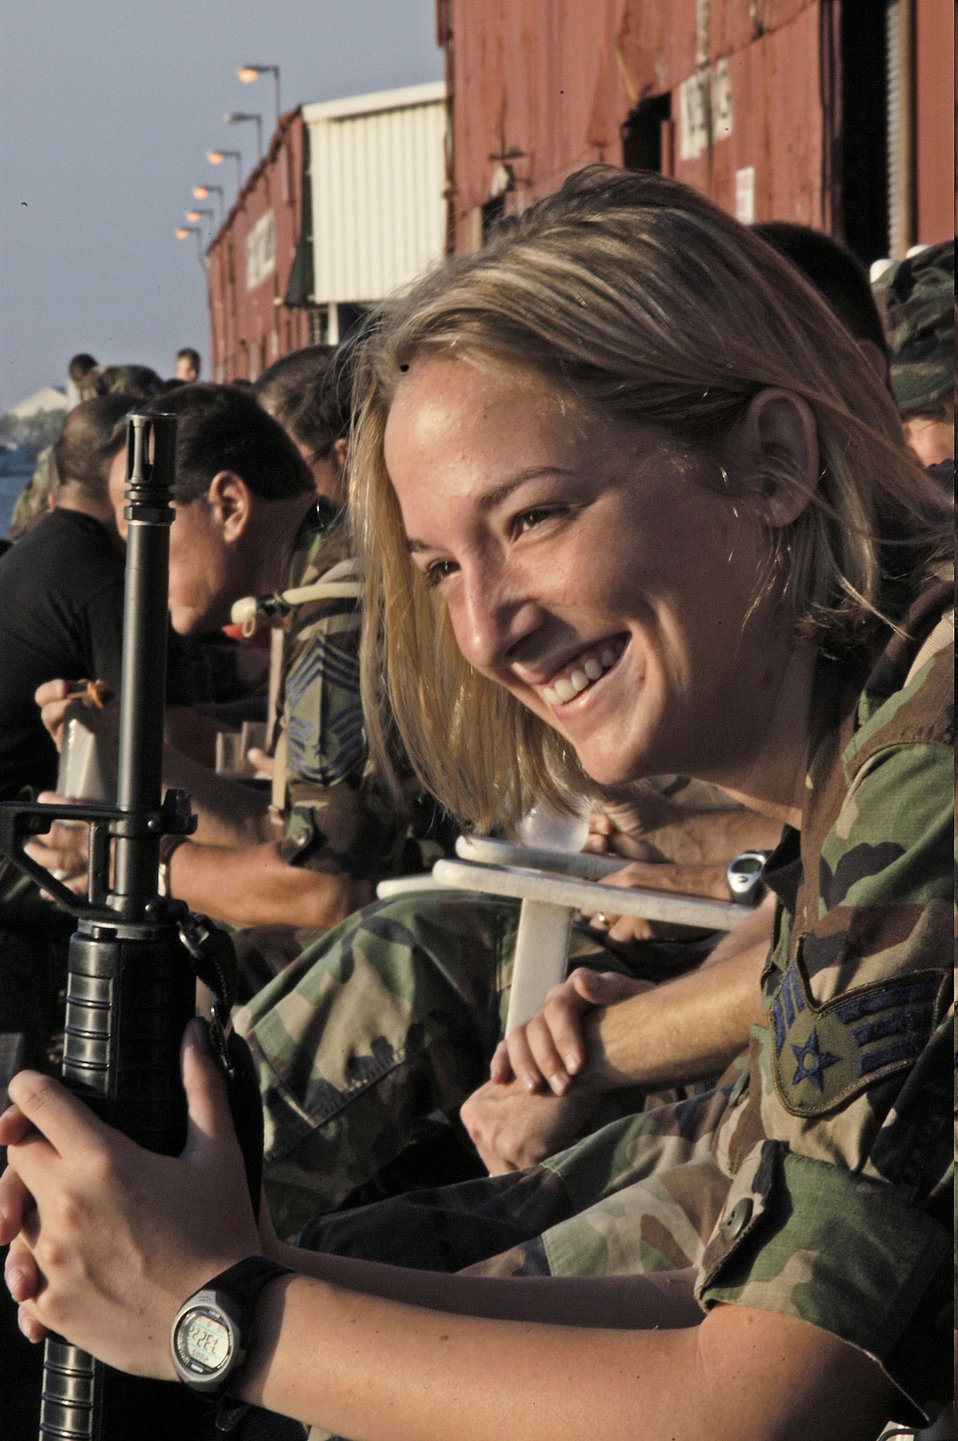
Daily brief

NEW ORLEANS -- Senior Airman Angela Kaster prepares for the day's taskings Sept. 9. While providing military support in the wake of Hurricane Katrina. She is deployed with the the Texas Air National Guard from San Antonio.